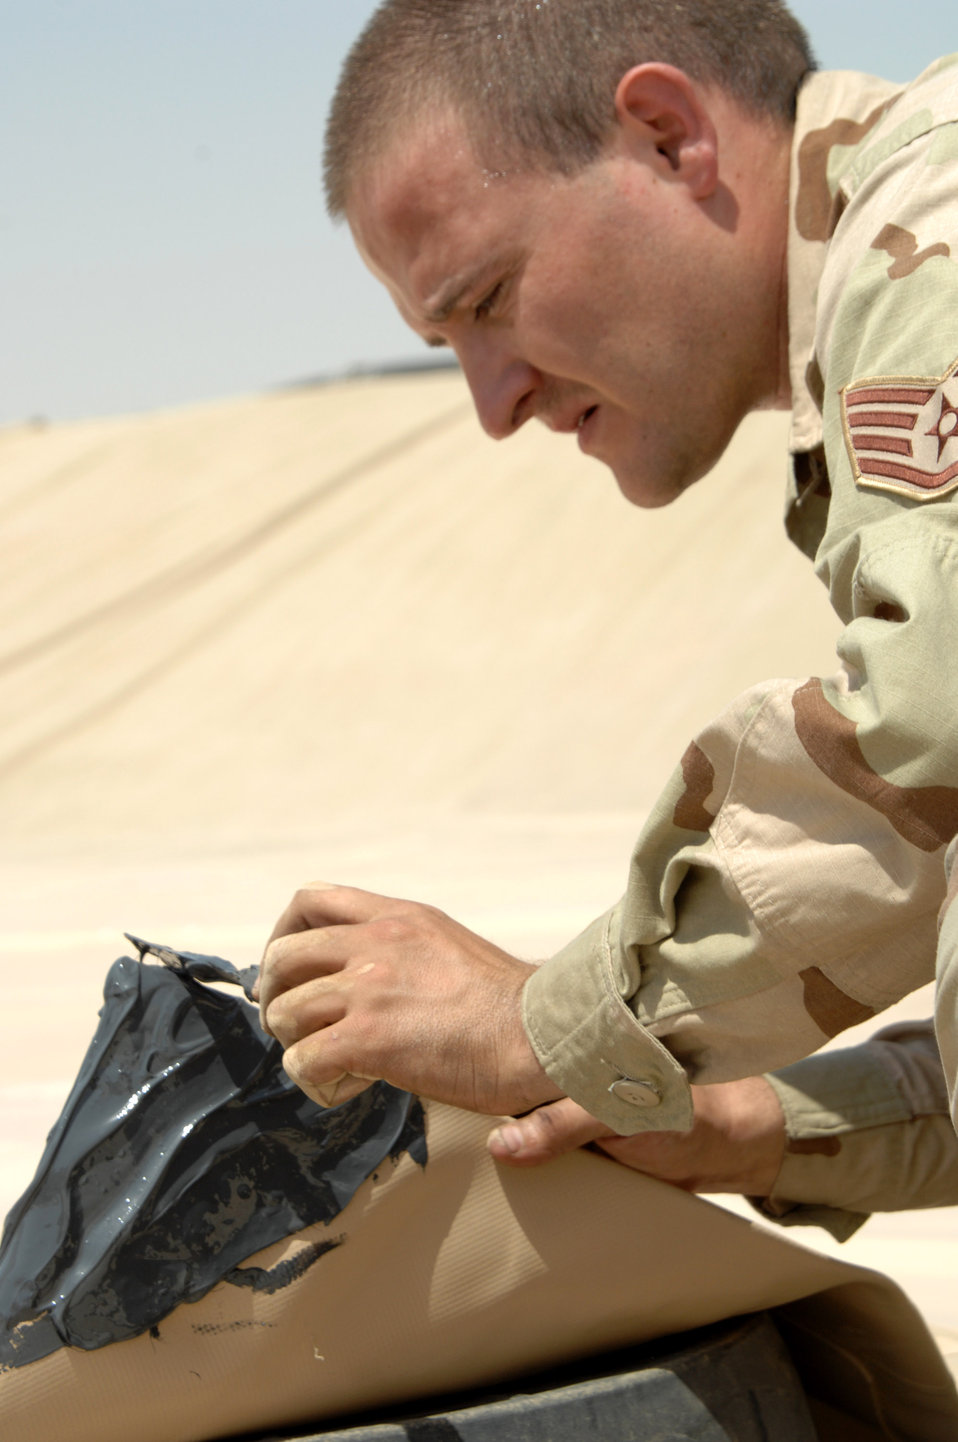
Kirkuk Airmen upgrade fuel storage

Staff Sgt. Mark Chance seals a corner of a new fuel bladder during installation June 19 at Kirkuk Regional Air Base, Iraq. The bladder will be filled with JP-8 jet fuel. Fuel storage bladders are collapsible, flexible storage containers that provide temporary as well as long term fuel storage. Sergeant Chance is with the 506th Expeditionary Logistics Readiness Squadron.